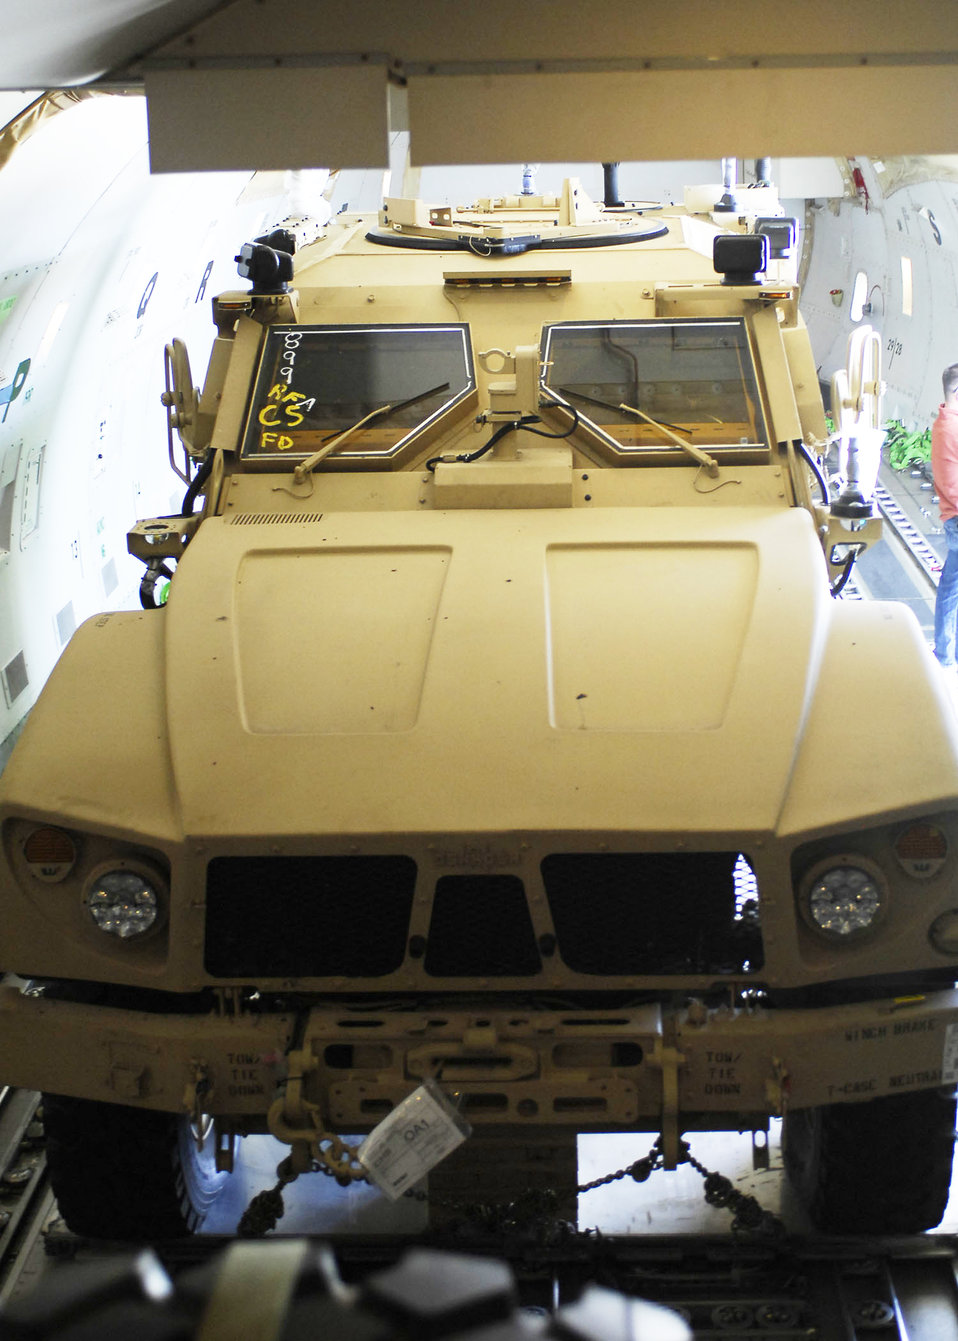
Bagrams new arrivals

A mine-resistant ambush-protected all-terrain vehicle waits to be unloaded Nov. 9, 2009, from a Boeing 747 at Bagram Airfield, Afghanistan. The M-ATVs support mounted patrols, reconnaissance, security, convoy protection, communications, command and control, and combat service support. The M-ATV is designed to replace the up-armored Humvee in Afghanistan.